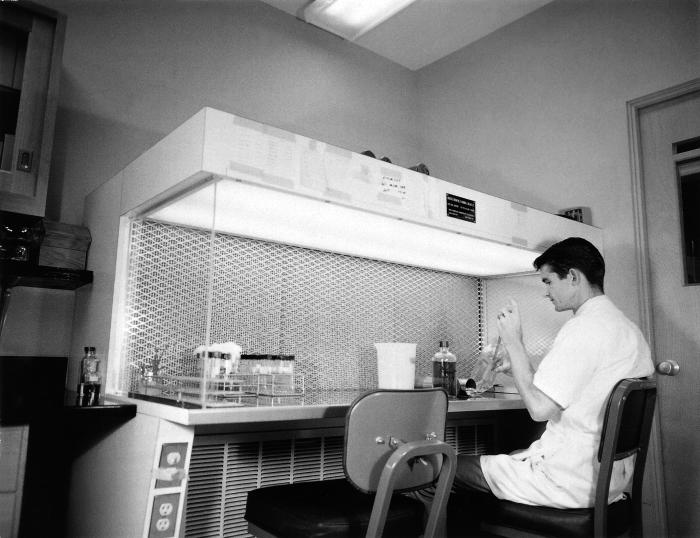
From 1967, this image depicted a laboratory technician seated at a biological safety cabinet, while he appeared to be pipetting an unknown liquid from a glass beaker. The ventilated hood was able to evacuate the hooded area air by drawing fresh air into the hood, thereby, keeping it out of the laboratory environment.